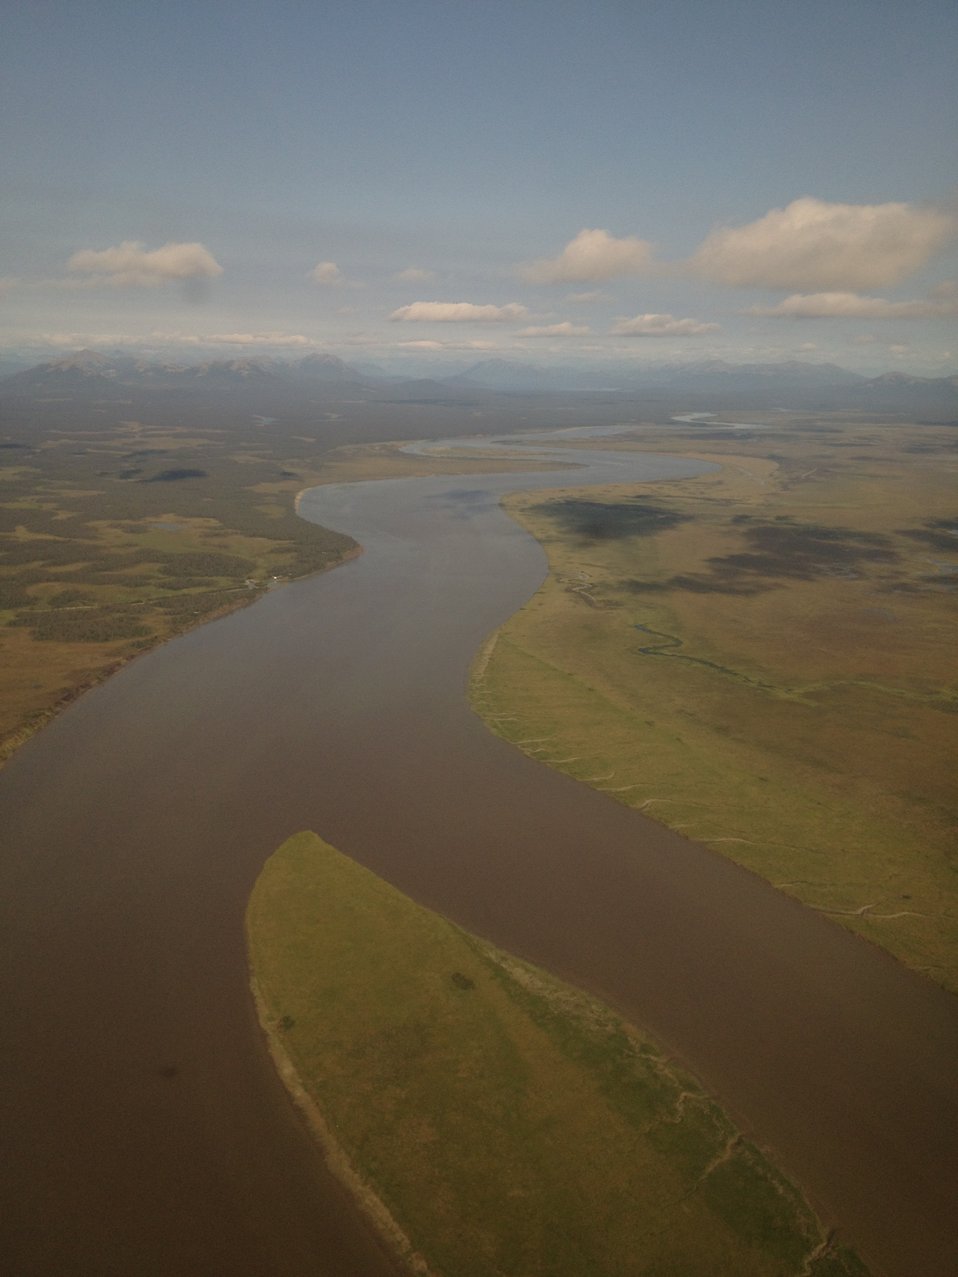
Bristol Bay Watershed

In August, Administrator McCarthy visited the Bristol Bay watershed, home to the world’s largest sockeye salmon ecosystems, as well as mineral resources like gold and copper.